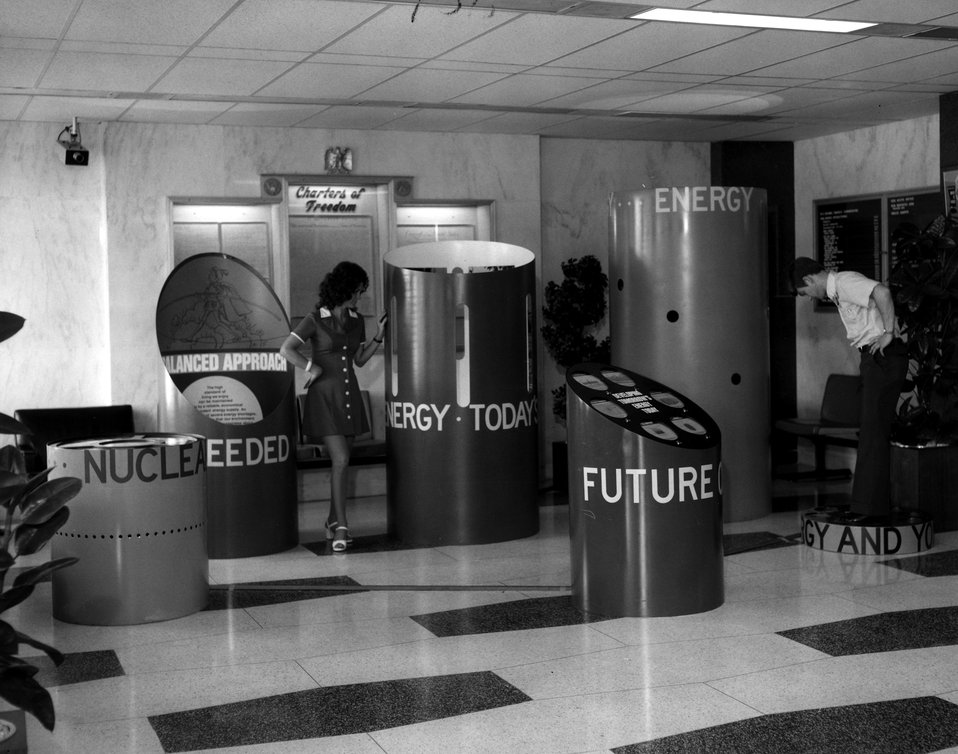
The A.E.C has a series of exhibits for use at conferences, shopping centers, libraries and museums. One such exhibit covers 'Energy' and explains mankind's efforts to satisfy growing energy demands. c. 1974